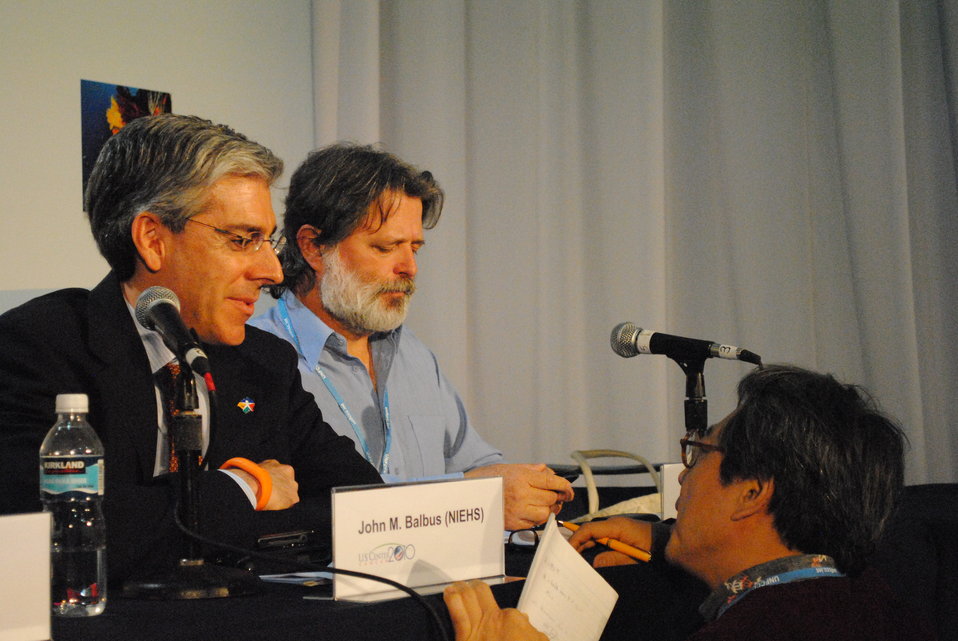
NIEHS' Dr. Balbus Speaks With Audience Members

The National Institute of Environmental Health Sciences' Dr. John Balbus speaks with a member of the audience following the panel, Climate Change and Human Health, at the U.S. Center at COP-16 in Cancun, Mexico, on December 3, 2010.